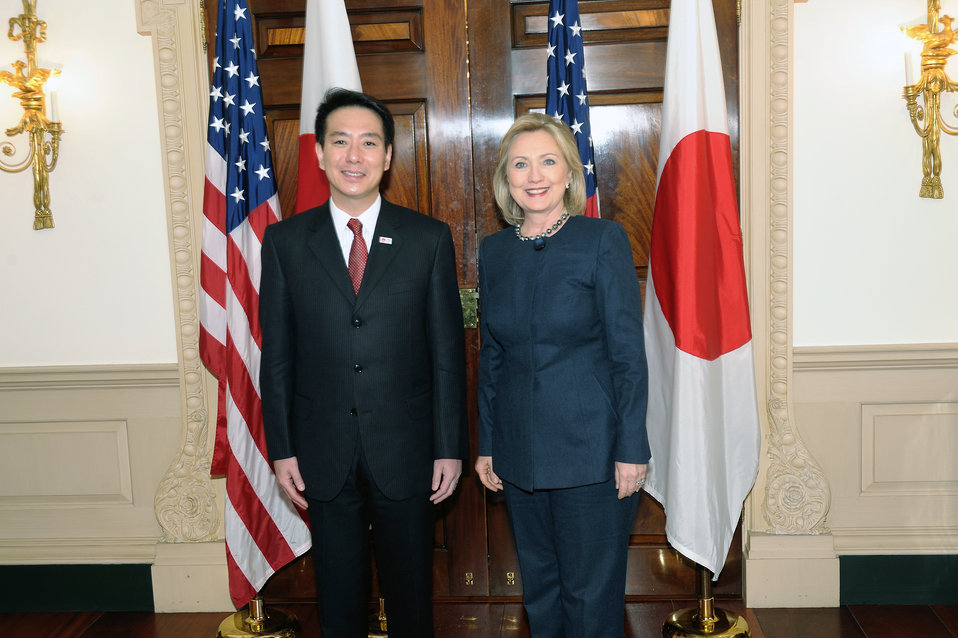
Secretary Clinton Hosts a Bilateral Meeting With Japanese Foreign Minister Seiji Maehara

U.S. Secretary of State Hillary Rodham Clinton hosts a bilateral meeting with Japanese Foreign Seiji Maehara in the Deputy Secretary’s Conference Room at the U.S. Department of State in Washington, D.C., on January 6, 2010.